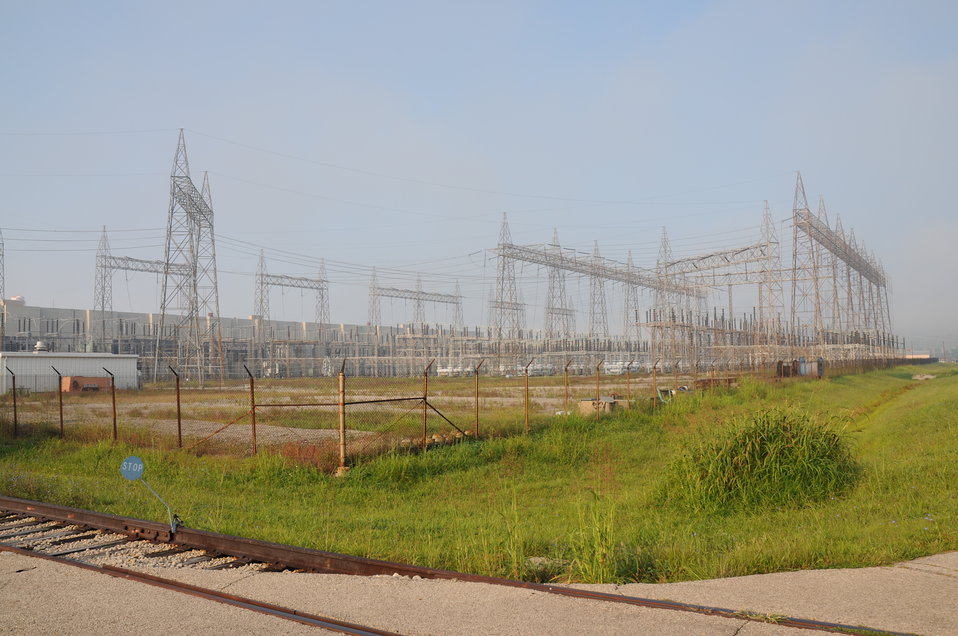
Recovery Act Project Clears Portsmouth Switchyard, Benefits Community through Recycling

A view of the X-533 Electrical Switchyard before demolition.

The switchyard distributed power to one of three uranium enrichment process buildings and support facilities. An extensive amount of materials removed from the switchyard are recyclable.